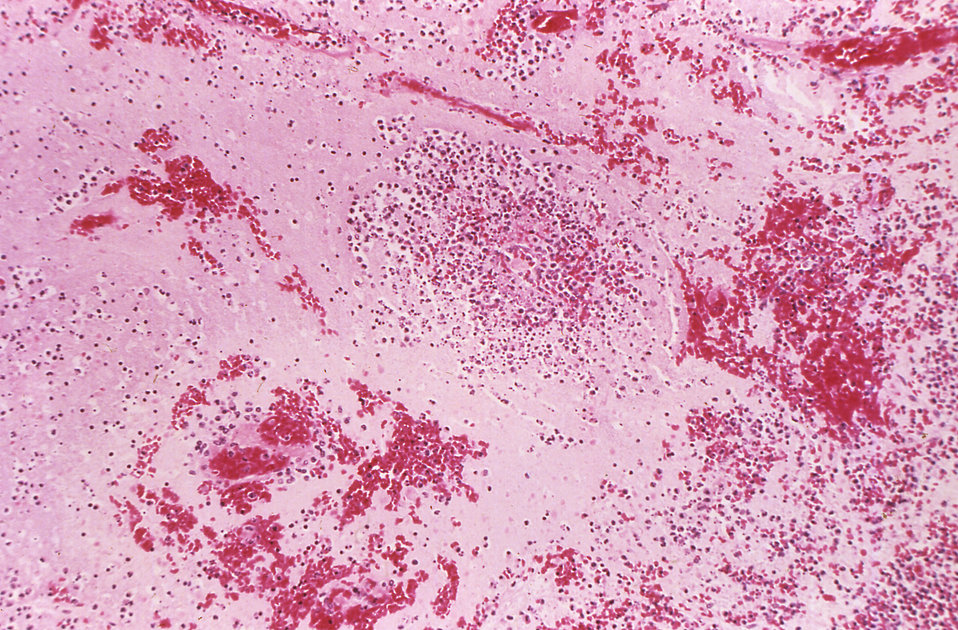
Under a low magnification of 96X, this hematoxylin-eosin stained (H&E) photomicrograph reveals some of the histopathologic changes seen in a lymph node tissue sample in a case of fatal human plague. Note the medullary necrosis accompanied by fluid due to the presence of Yersinia pestis bacteria.